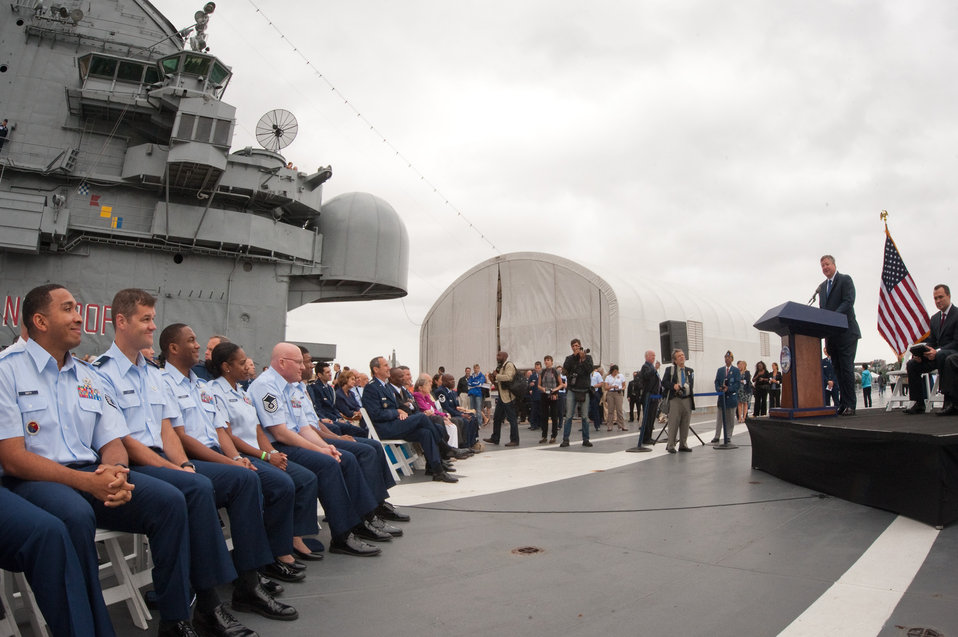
Air Force Week New York City Proclamation Ceremony

Secretary of the Air Force Michael Donley speaks during the Air Force Week New York City proclamation ceremony at the Intrepid Sea, Air and Space Museum Aug. 24, 2010, in New York City. The event was highlighted by a six-ship flyover by the Air Force aerial demonstration team, the Thunderbirds.